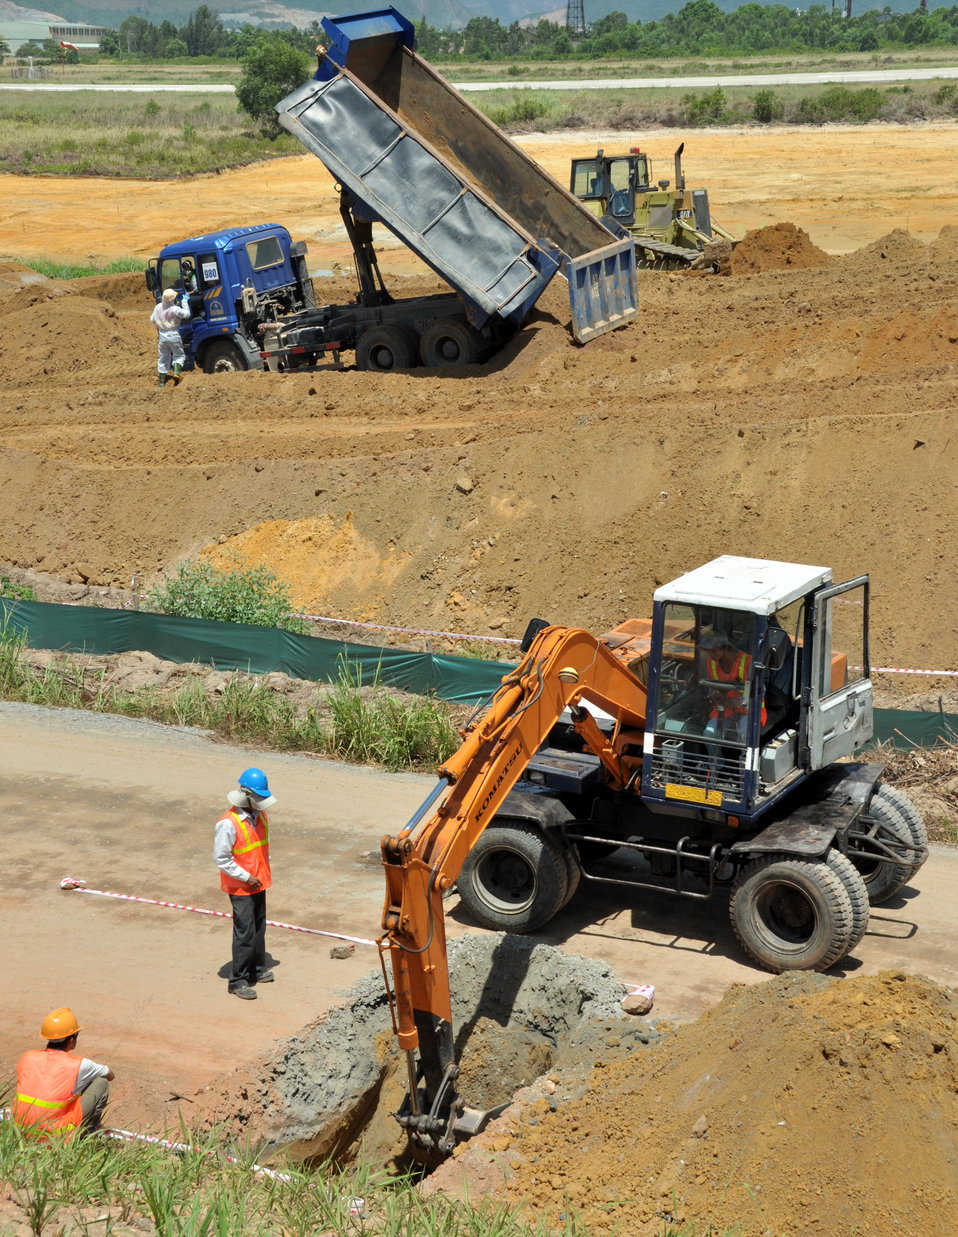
Environmental Remediation Progress at the Danang Airport site

Progress at the Remediation of Dioxin Contamination Project Site

Danang, Vietnam, June 5, 2013